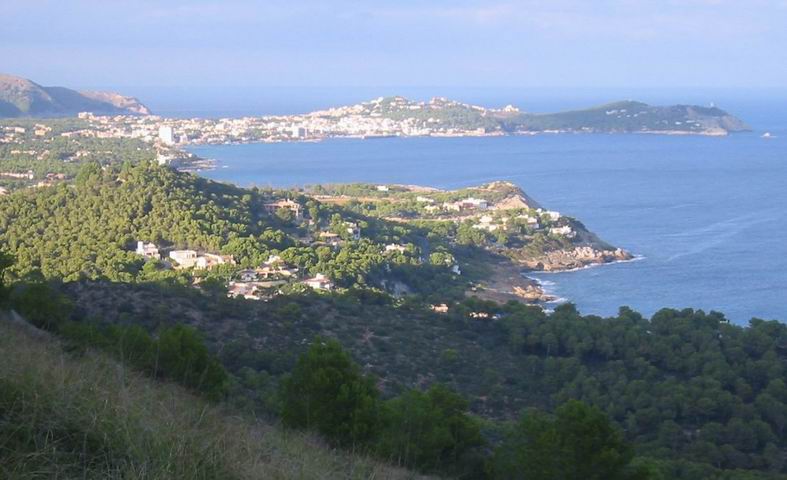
Die Landzunge von Cala Ratjada in nördlicher Richtung fotografiert. Eigenes Bild.